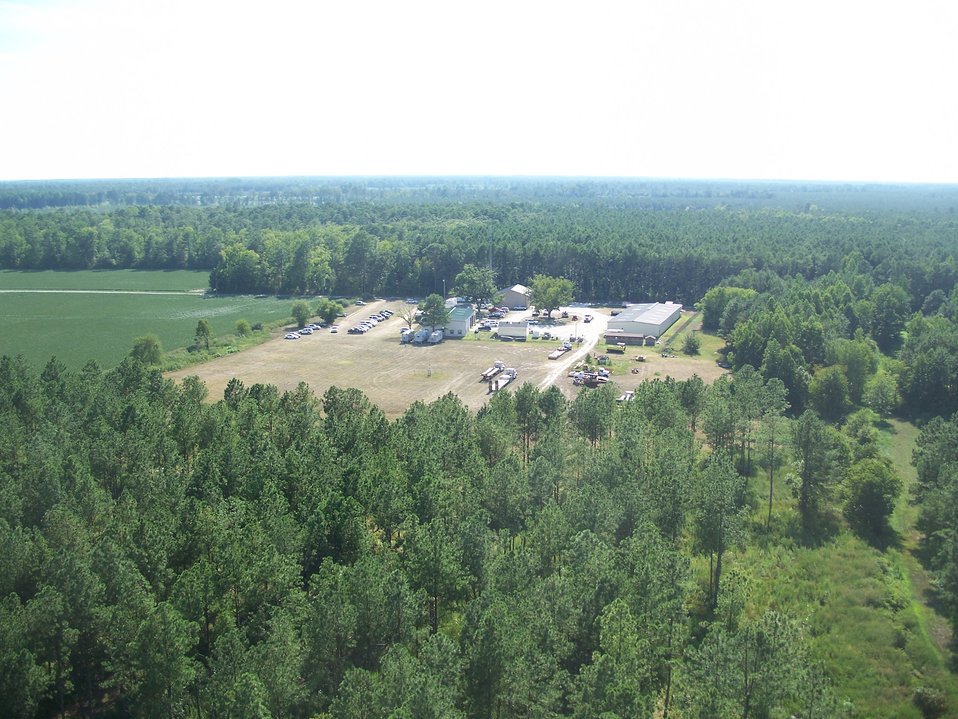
Lateral West Incident Command Post

Suffolk, VA, August 2011: Trailers serving as offices for the Southern Area Blue Incident Management Team line a field behind the Fire Shop at Great Dismal Swamp National Wildlife Refuge.